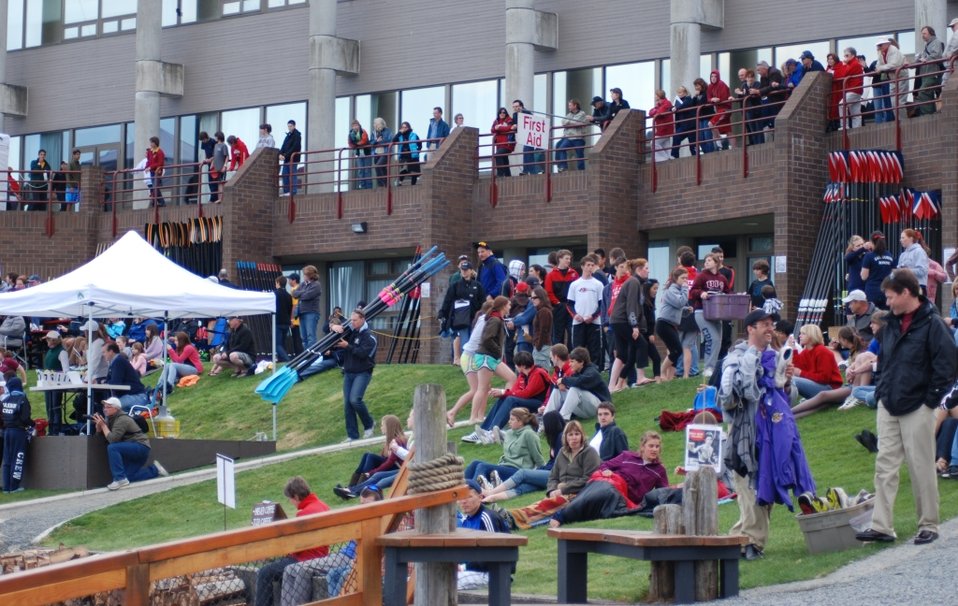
Spectators and rowers at 2009 Brentwood Regatta